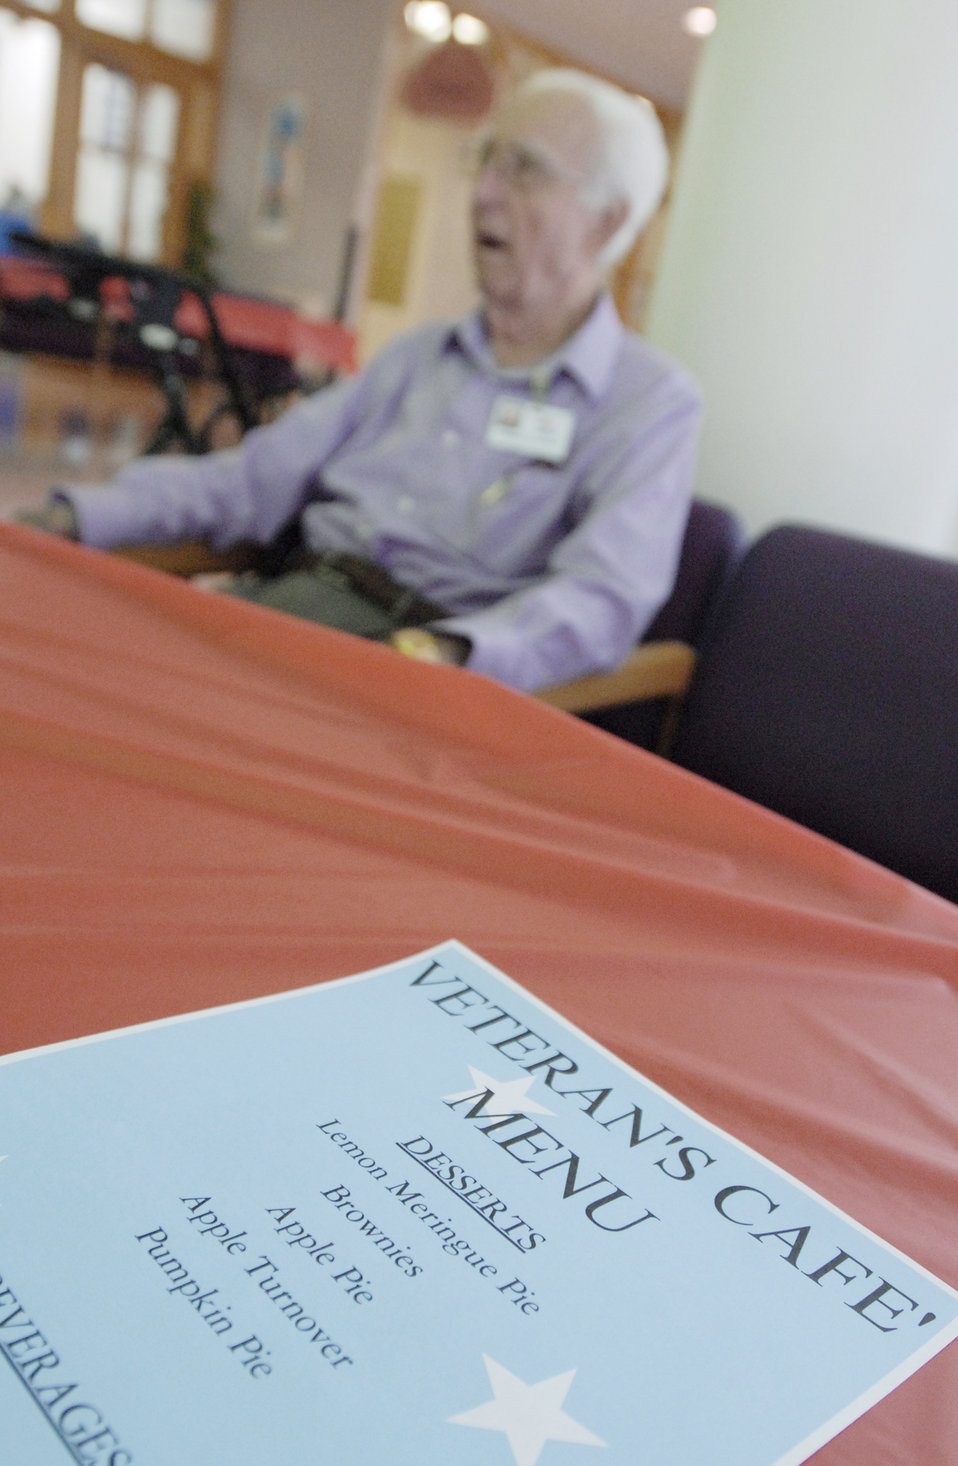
Joint Enlisted Council lift spirits at veterans home

Retired Chief Master Sgt. Kenneth Porter waits for his meal Oct. 16, 2009, at the U.S. Soldier's and Airmen's Home in Washington, D.C. The National Capital Region Joint Enlisted Council visited residents to lift spirits.